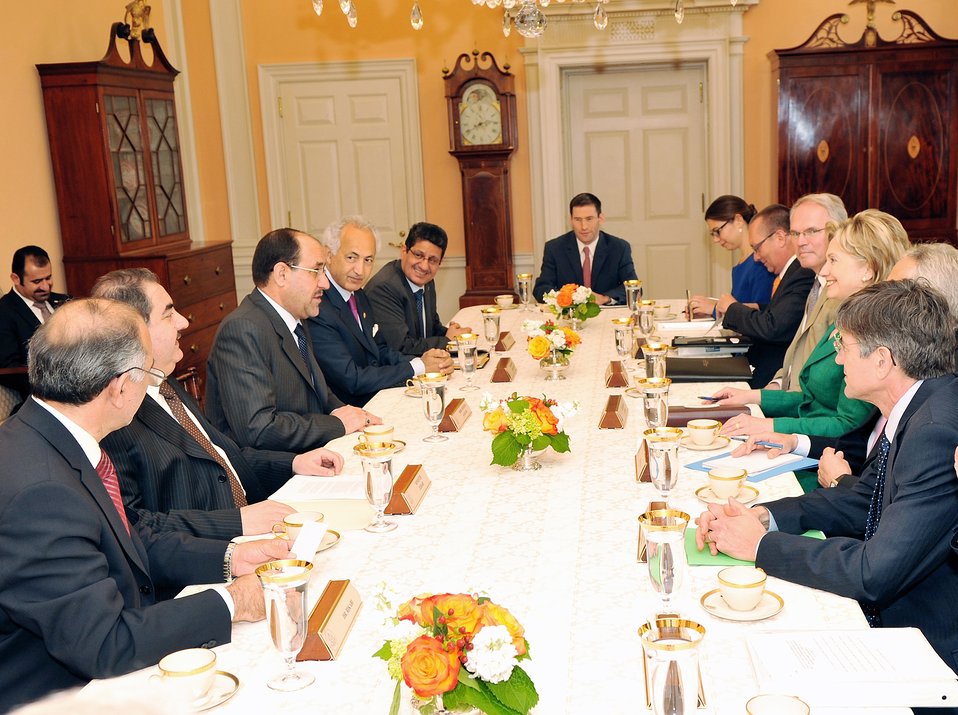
U.S.-Iraq High Coordinating Committee Meeting

U.S. Secretary of State Hillary Rodham Clinton holds U.S.-Iraq High Coordinating Committee Meeting with His Excellency Nouri al-Maliki, Prime Minister of the Republic of Iraq at the U.S. Department of State in Washington, DC July 24, 2009.